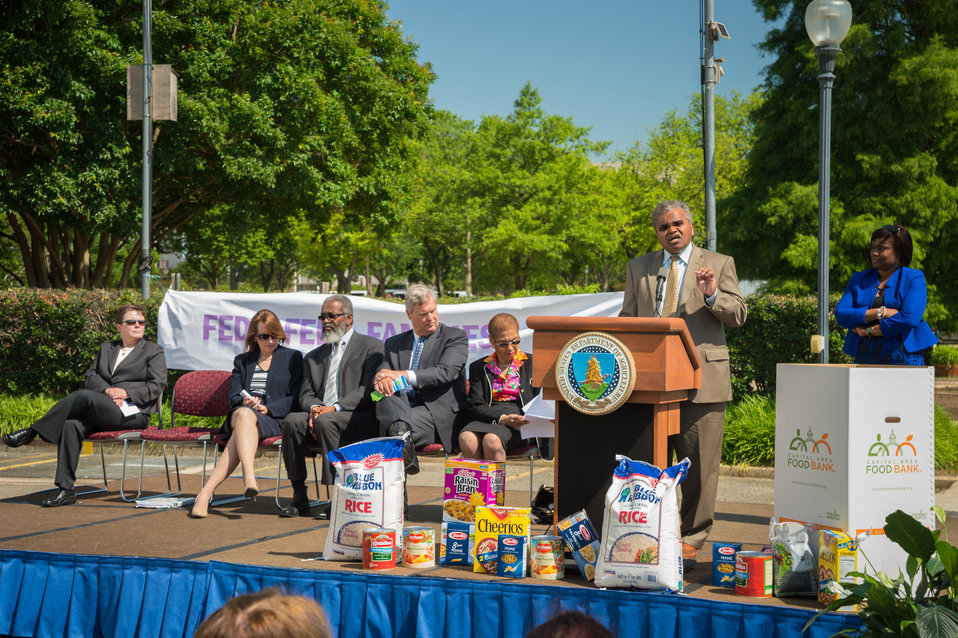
Mathy Stanislaus, Assistant Administrator for the Office of Solid Waste and Emergency Response, Environmental Protection Agency (EPA) accepted the challenge of friendly competition during the 2014 National Feds Feed Families Kick-Off at the United States Department of Agriculture’s (USDA’s) People’s Garden in Washington, DC, Mon. Jun. 2, 2014. The theme of this year’s event is, “Help Knock Out Hunger.” The U.S. Department of Agriculture will lead the campaign with the support of the Chief Human Capital Officers Council and other agency partners, which officially begins on June 1 and will run through August 27, 2014. On stage behind Stanislaus are Pamela Mitchell, Deputy Chief Human Capital Officer, Department of Defense, Dr. Gregory Parham, Assistant Secretary for Administration, Agriculture Secretary Tom Vilsack, Congresswoman Eleanor Holmes Norton and Karen Comfort, National Program Manager, Feds Feed Families.